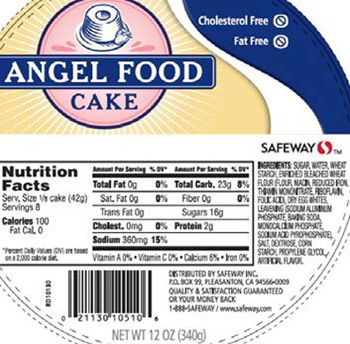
RECALLED – Angel Food Cakes

September 26, 2013 – Product Recall – Safeway Recalls Several Varieties of Angel Food Cake Due to Undeclared Soy and Milk Allergens.